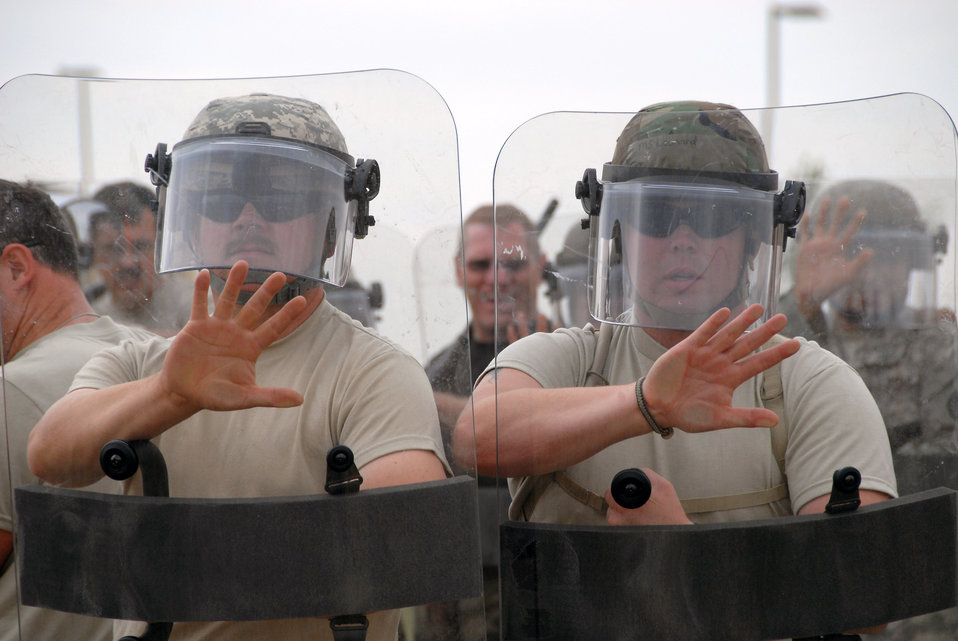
Quiet riot

Members of the Montana Air National Guard Quick Response Force conduct civil disturbance training Aug. 12 in Great Falls, Mont. The two-day instruction consisted of riot control, force-on-force line training and the use of nonlethal weapons gunnery.